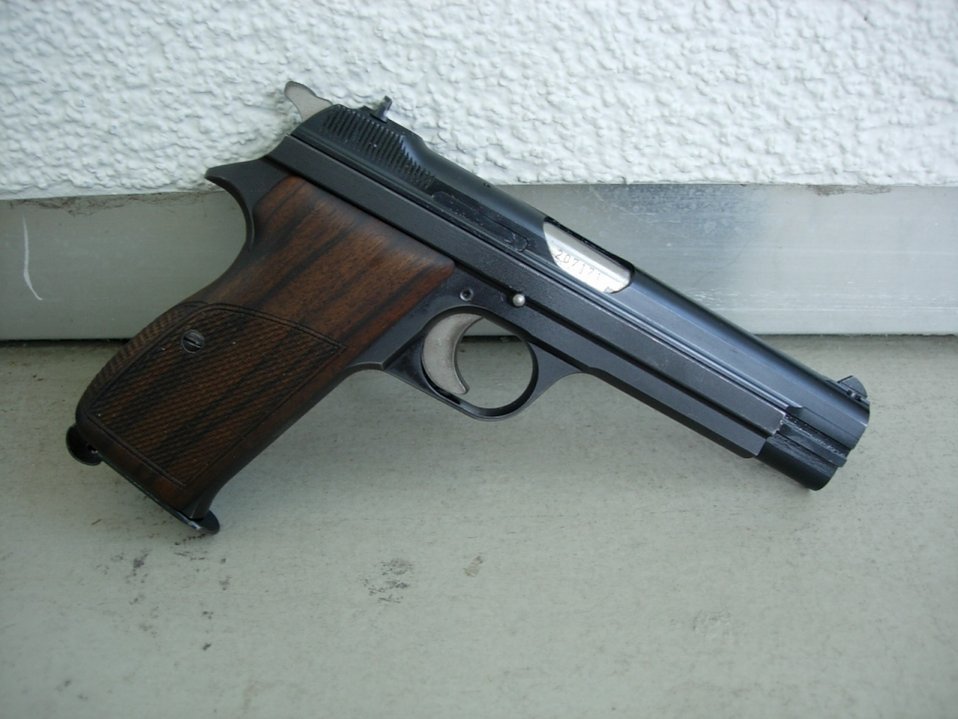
Deutsch: Pistole SIG 210, Armee, mod. Griffschalen (Holz)